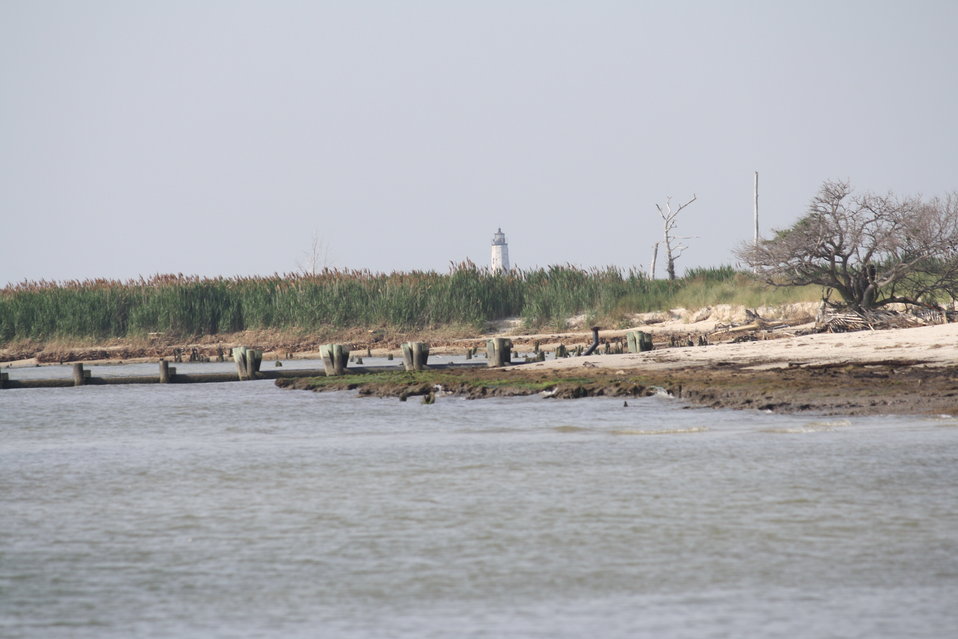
Bavon Beach project

The New Point Comfort lighthouse was once connected to Bavon Beach. In 1933, a hurricane severed the lighthouse from the mainland, so that it can now only be reached by boat.